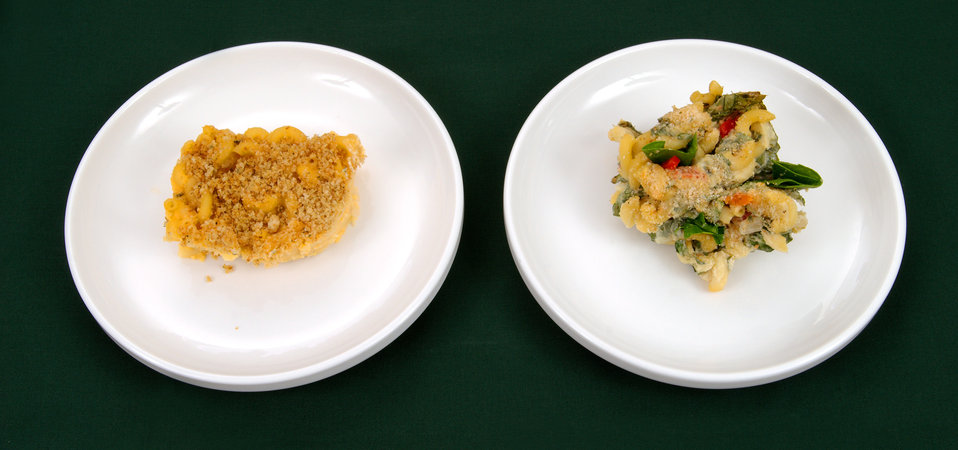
Here we see a comparison between two choices one could make for a macaroni side dish. On the left, is a traditional macaroni casserole, composed of pasta, potatoes, cheese, and a breadcrumb topping. On the right, is the healthier choice between the two, made instead with pasta, spinach, red and yellow peppers, parmesan cheese and tasty spices.